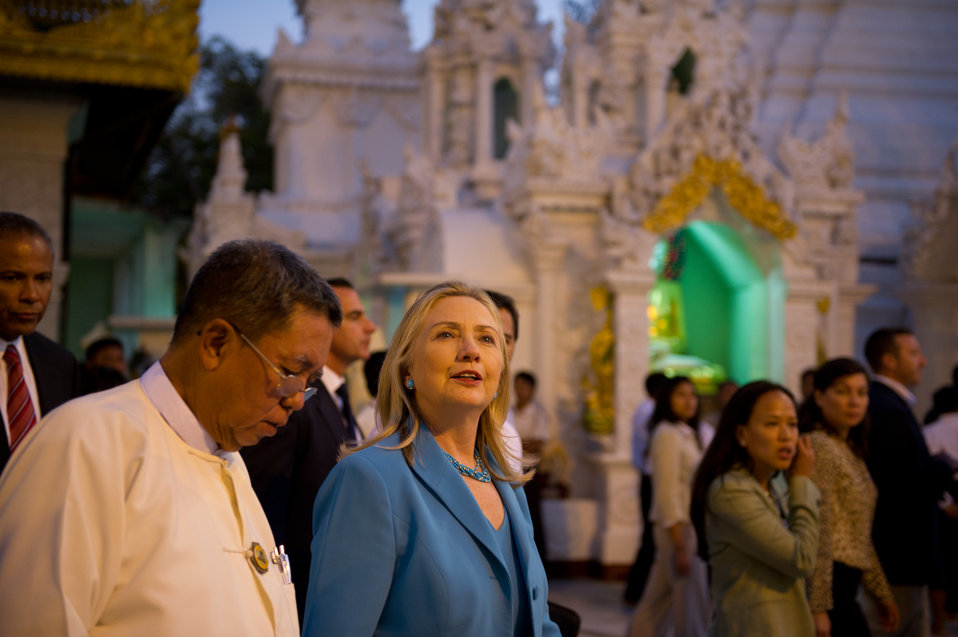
Secretary Clinton Visits the Shwedagon Pagoda

U.S. Secretary of State Hillary Rodham Clinton visits the Shwedagon Pagoda in Rangoon, Burma, on December 1, 2011.